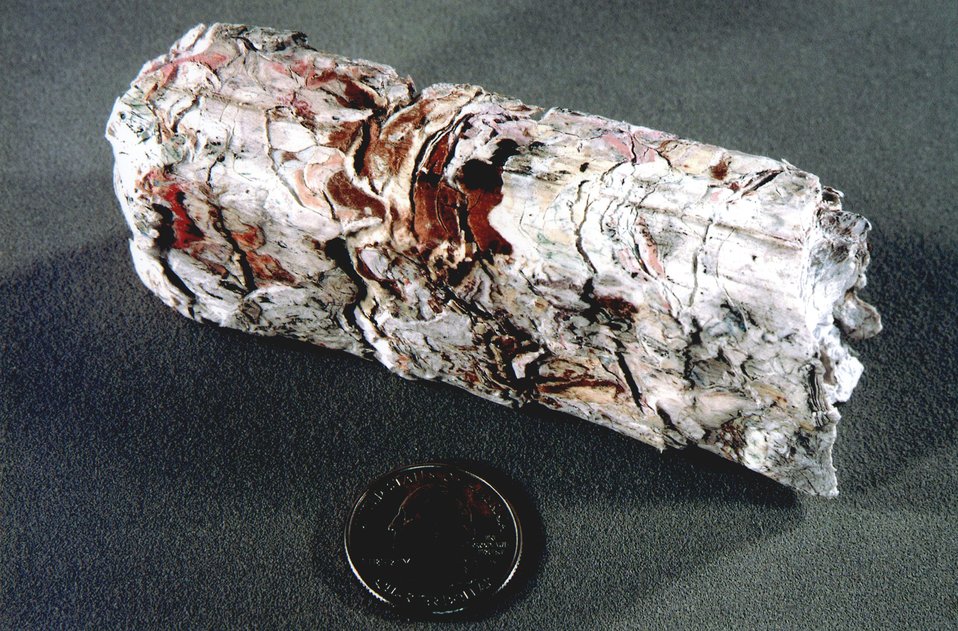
AN EXAMPLE OF THE CUBES PRODUCED BY THE CUBER TECHNOLOGY.

THROUGH AN INTERAGENCY AGREEMENT, THE SAVANNAH RIVER SITE IS USING MACHINERY TO PROCESS OFFICE WASTE INTO CONDENSED CUBES WHICH ARE THEN FED INTO A COAL-FIRED PLANT ON SITE TO SUPPLEMENT COAL AS AN ENERGY SOURCE. THE CUBER TECHNOLOGY WAS TESTED AT DOE'S IDAHO NATIONAL ENGINEERING AND ENVIRONMENTAL LABORATORY AND USED THERE UNTIL THE YEAR 2000 WHERE IT PROCESSED 267,899 POUNDS OF OFFICE WASTE INTO CUBES USED IN A COAL-FIRED, STEAM GENERATING FACILITY.